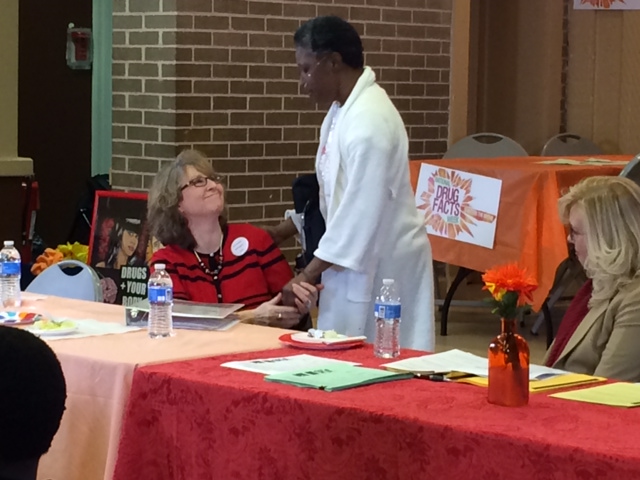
National Drug Facts Week: Orlando, Fl.

Folks from Orlando, Florida are 'Shattering the Myths' during the 2014 National Drug Facts Week at Orlo Vista Park.